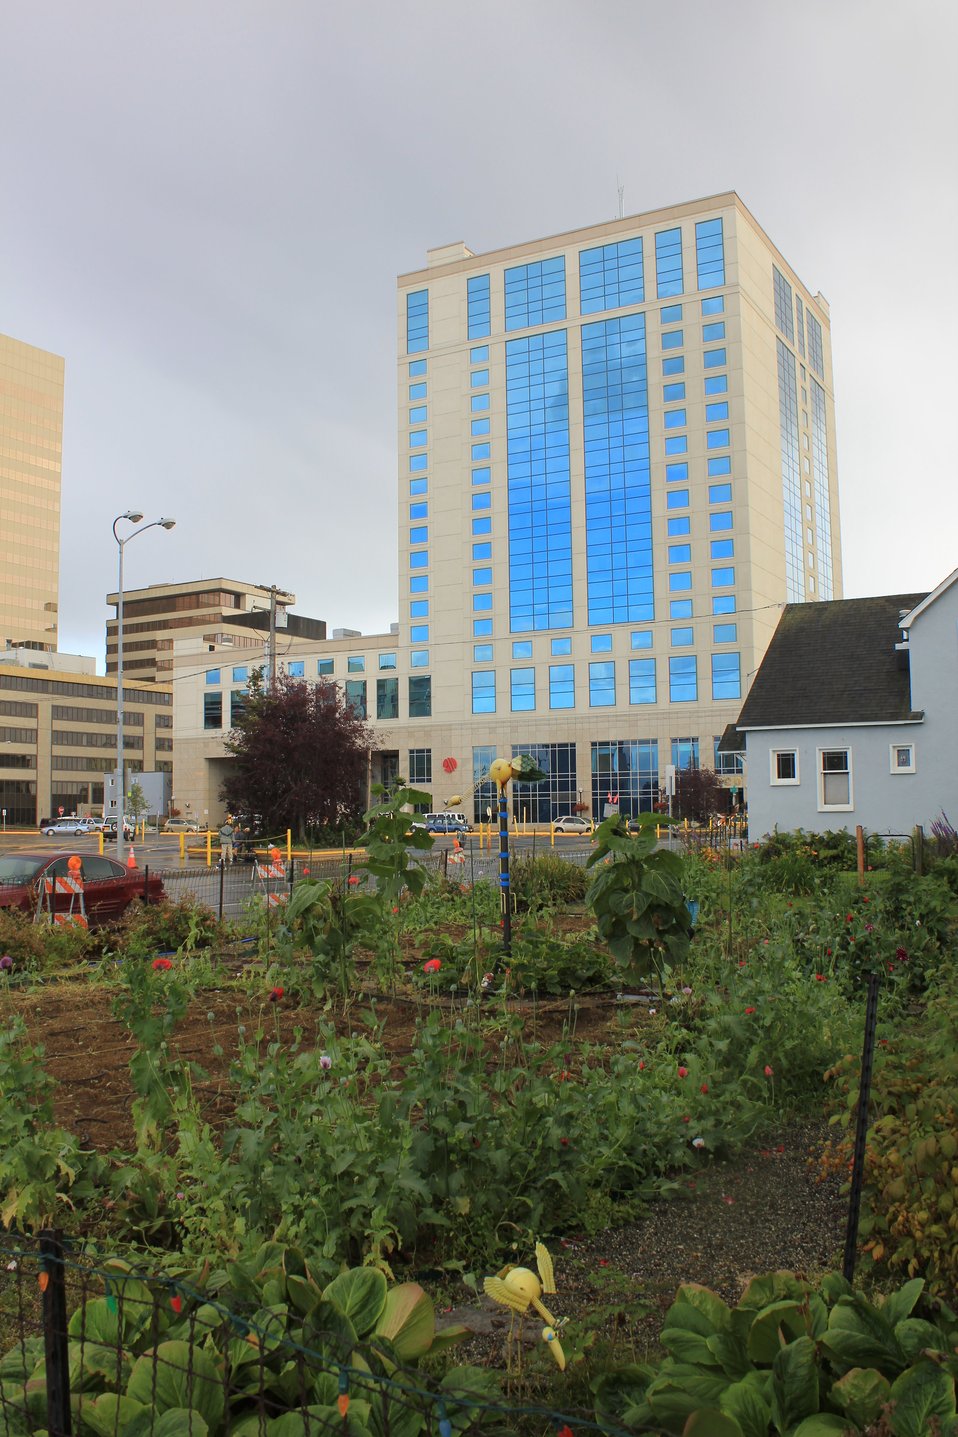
The Alaska Marriott with a private garden of what appears to be poppies.